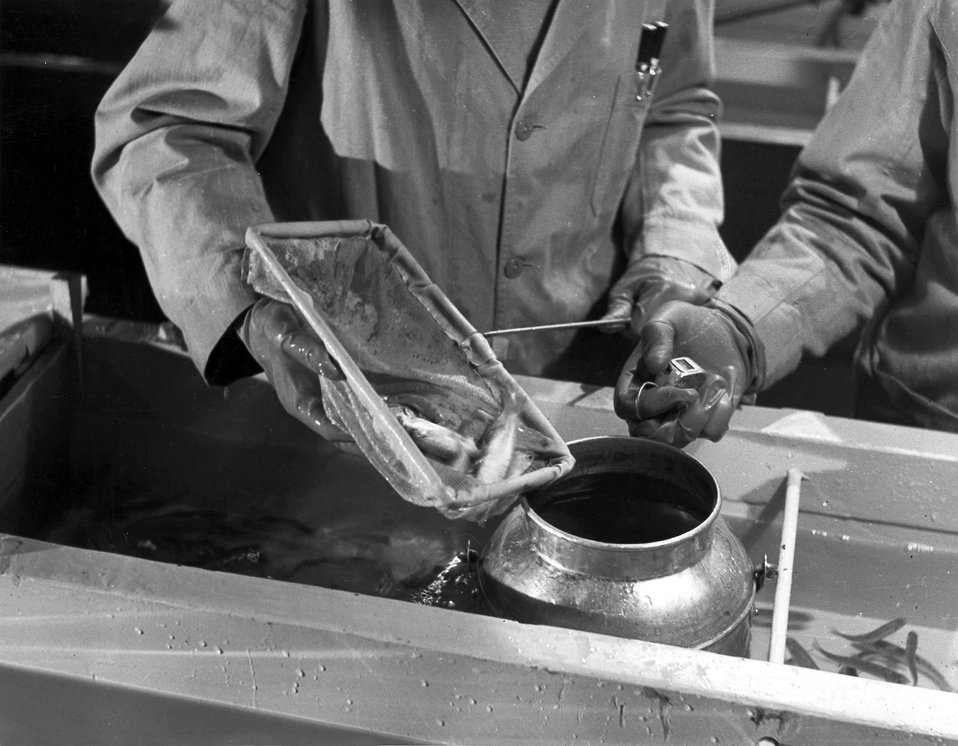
Columbia River water used to cool the plutonium-producing reactor at AEC's Hanford Works, near Richland, Washington. c. 1953